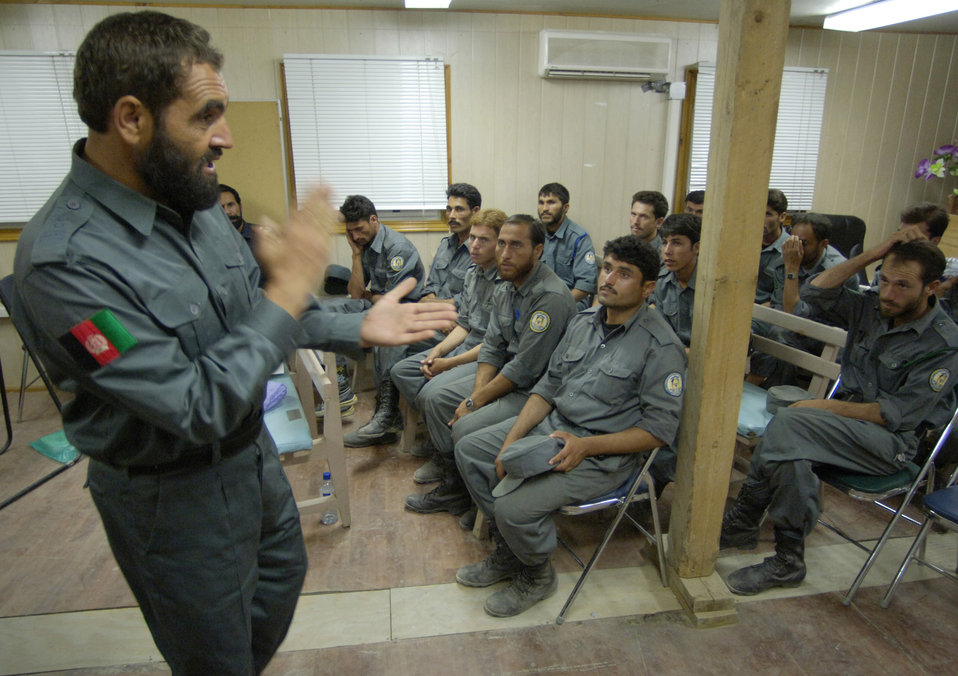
Afghans train Afghans with American mentorship

Afghan National Police Capt. Sanak teaches a class on the Afghanistan criminal code to Afghan National Auxiliary Police trainees Sept. 3. The trainees are attending a two-week ANAP sustainment course held on forward operating base Mehtar Lam in Afghanistan's Laghman province. The course is being taught for the first time entirely by ANP instructors. Previously, all ANP instruction was conducted by a police technical advisory team made up of U.S. Air Force security forces Airmen assigned to the Laghman Provincial Reconstruction Team. The PTAT's role has now shifted to monitoring the course's progress and mentoring the ANP instructors. The two-week course is required in order for auxiliary members to become full-fledged ANP officers. The course was written by PTAT members and approved by the Afghan interior ministry. Laghman is the first Afghanistan province to have Afghan instructors teaching an ANP course. The ANP instructors are competitively selected and must complete an instructor development course taught at a regional training center.